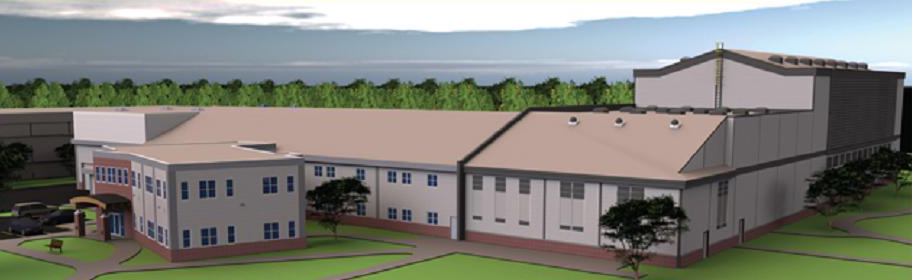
Recovery Act Grant; University of Maine

Artist's rendering of the planned Advanced Nanocomposites in Renewable Energy Laboratory at the University of Maine.